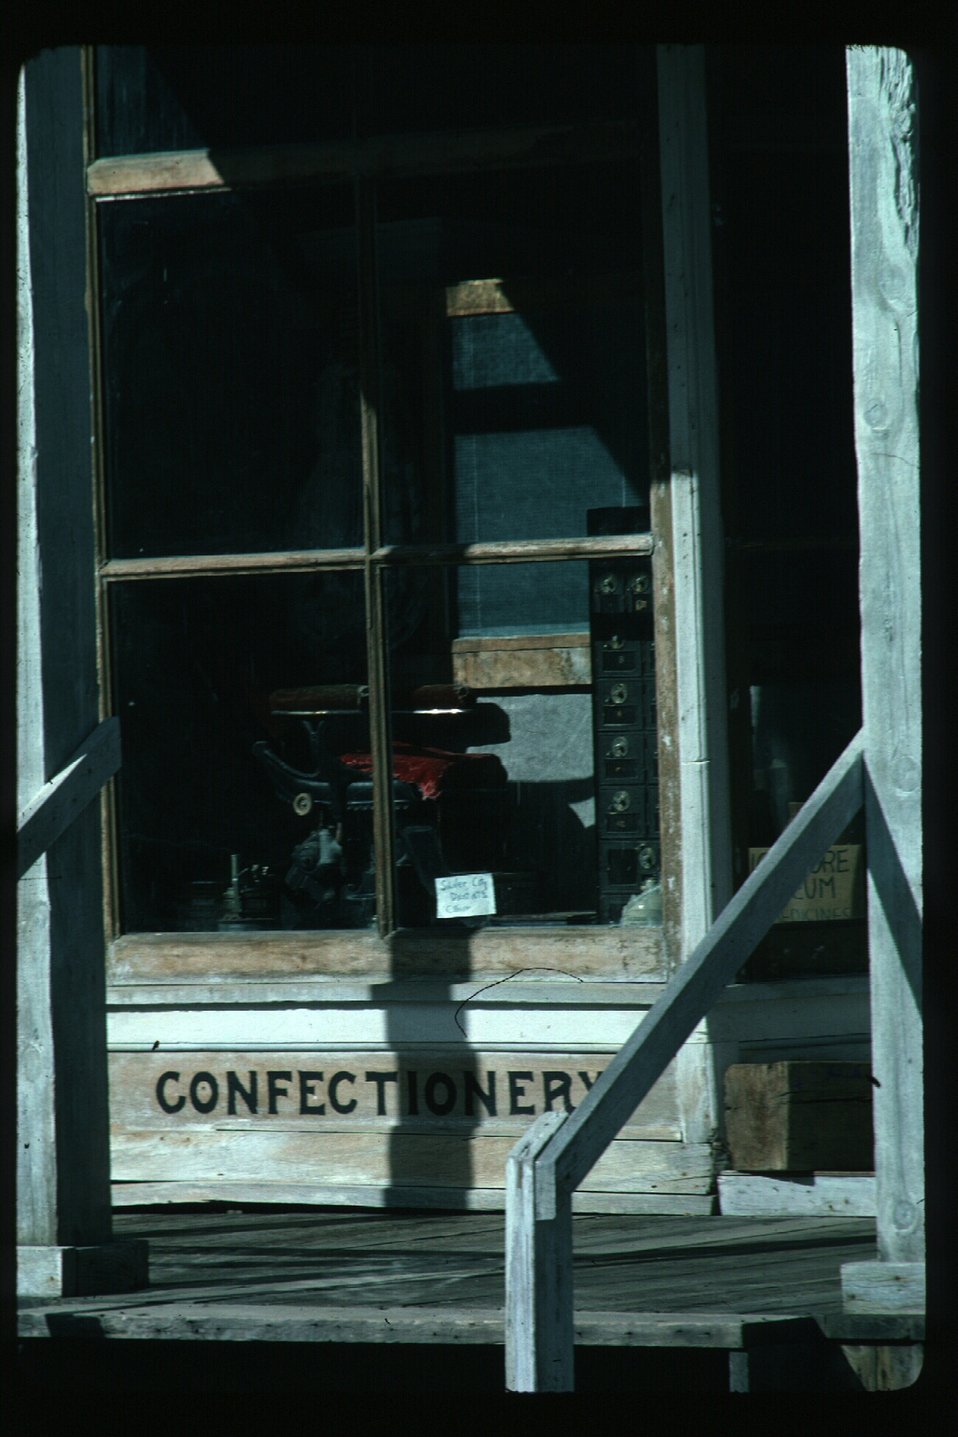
Silver City Archeology LSRD Lower Snake River District